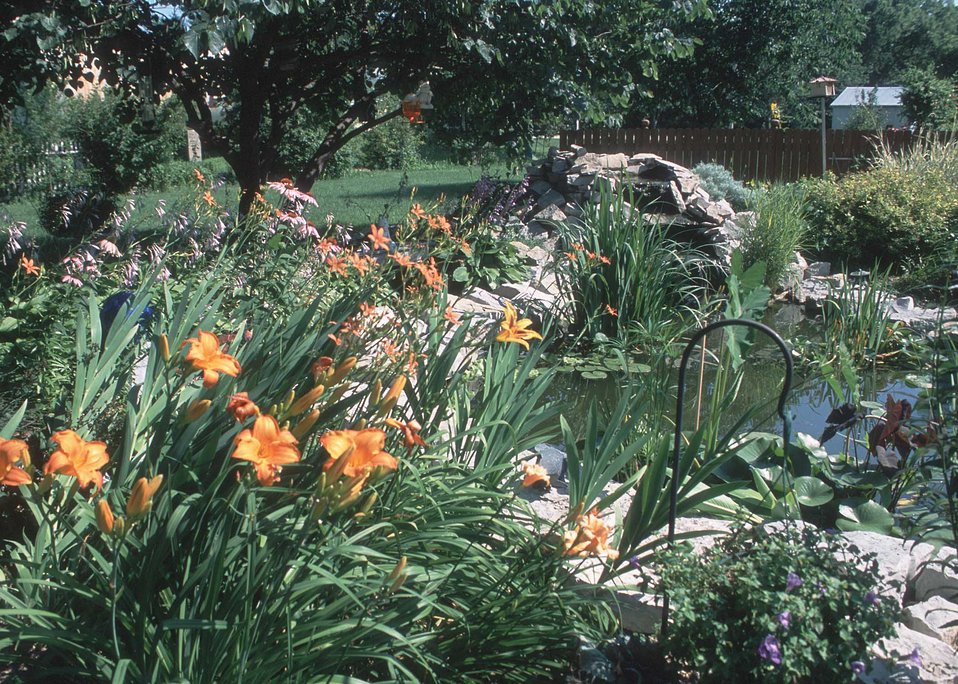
A variety of plants and a pond with circulating water are featured in a backyard in Keosauqua, Iowa.